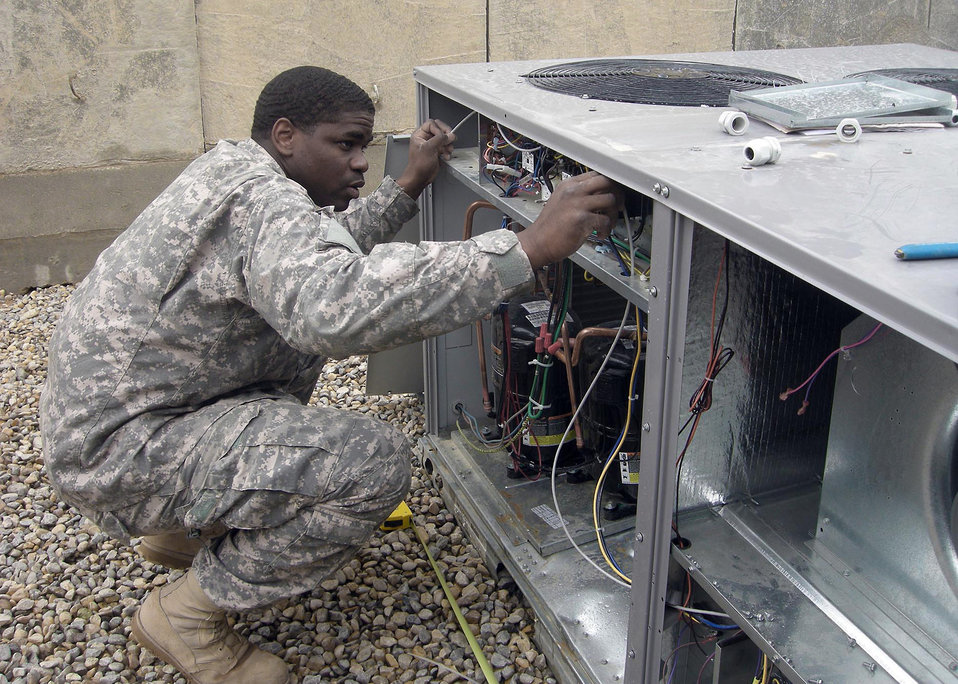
Civil engineers answer the call

At Patrol Base Shocker, Iraq, Senior Airman Tyrese Buie troubleshoots a malfunctioning air conditioning unit. Airman Buie is part of a 15-member, multi-craft team that supported the construction to double the size of the installation here. Airman Buie is deployed from F.E Warren Air Force Base, Wyo., and a native of Savannah, Ga. He is assigned to the 732nd Expeditionary Civil Engineer Squadron.